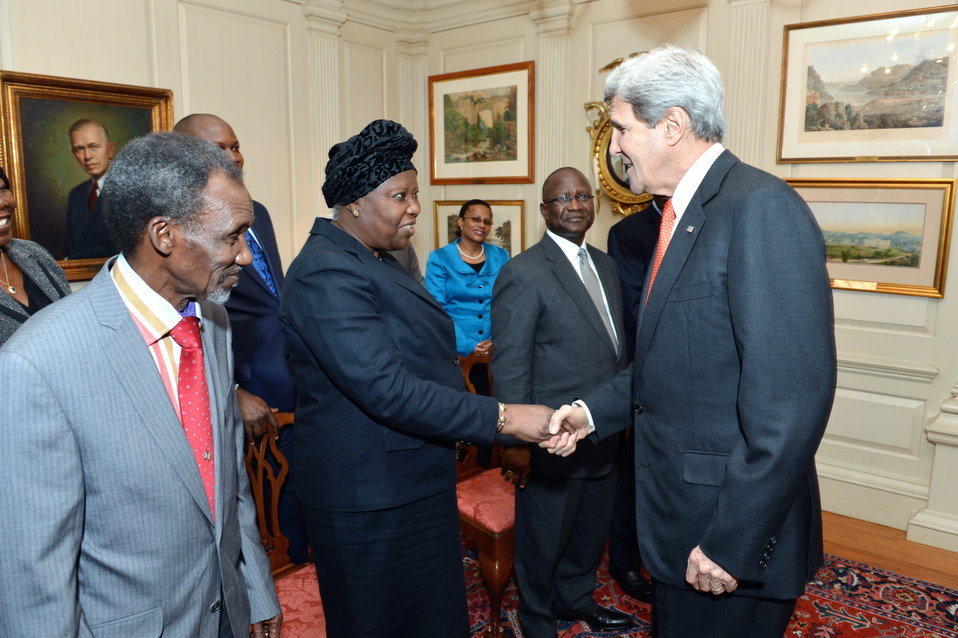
Secretary Kerry Meets With Chief Justices from Nigeria, Liberia, and Supreme Court Officials from Nigeria, Liberia, and Botswana

U.S. Secretary of State John Kerry Kerry meets with Chief Justices from Nigeria, Liberia, and Supreme Court Officials from Nigeria, Liberia, and Botswana at the U.S. Department of State in Washington, D.C., on April 9, 2014.